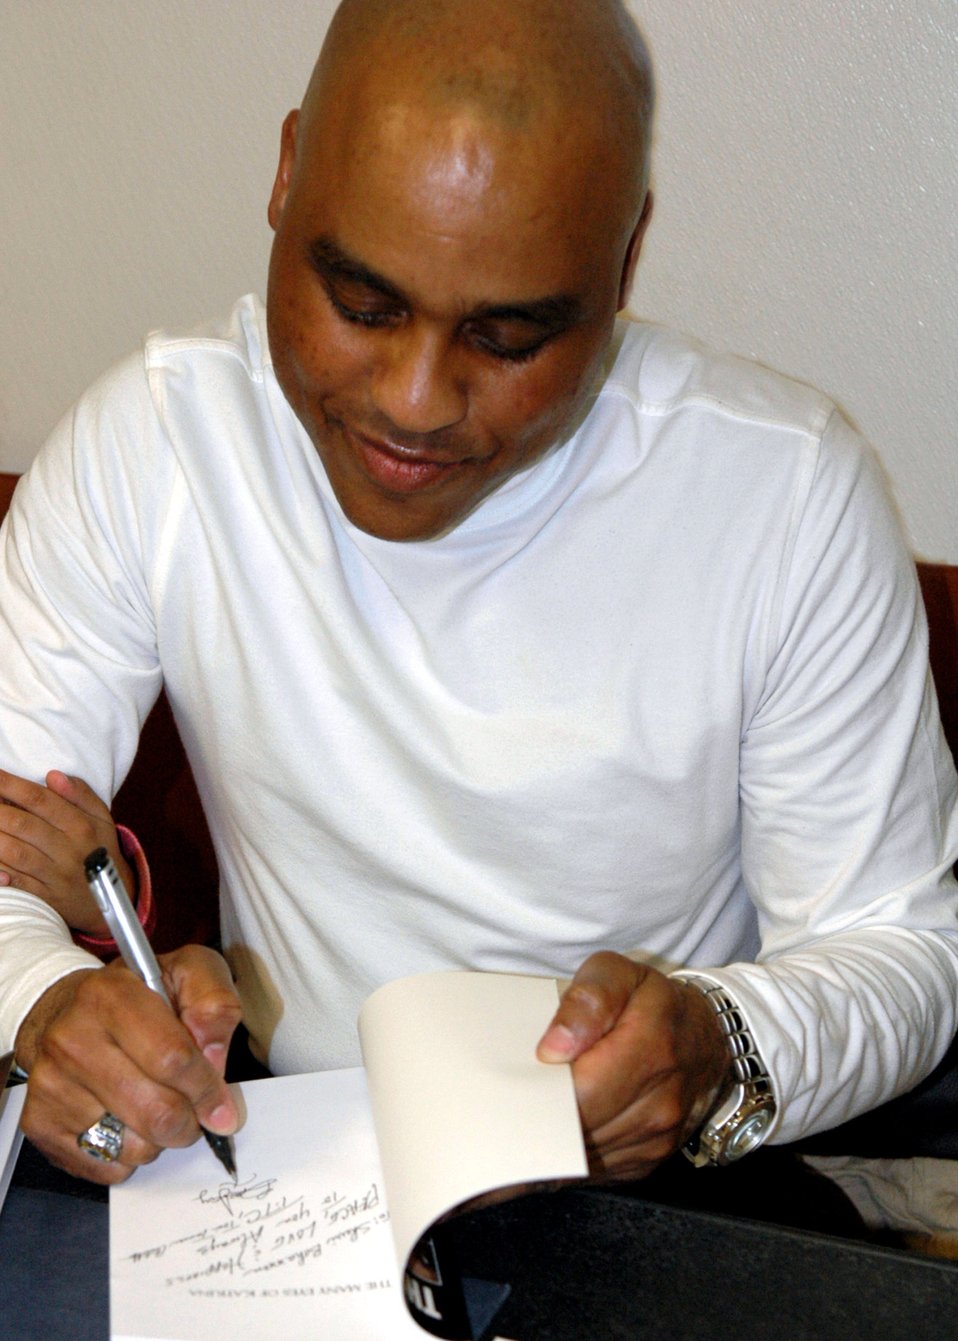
Bagram Airman makes difference on two fronts

Tech. Sgt. Bruce Johnson signs a copy of his latest book,